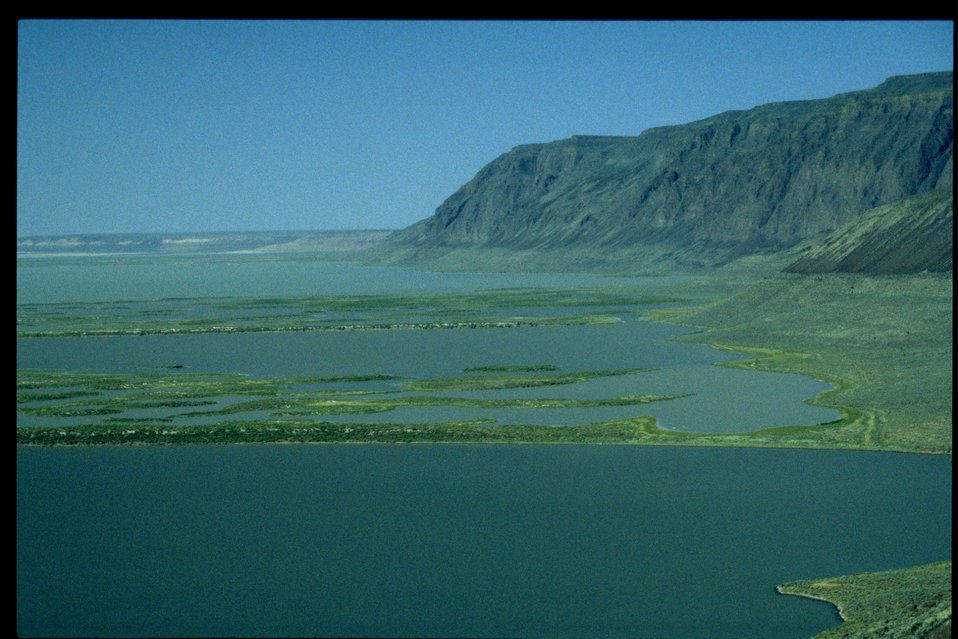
Warner Wetlands.